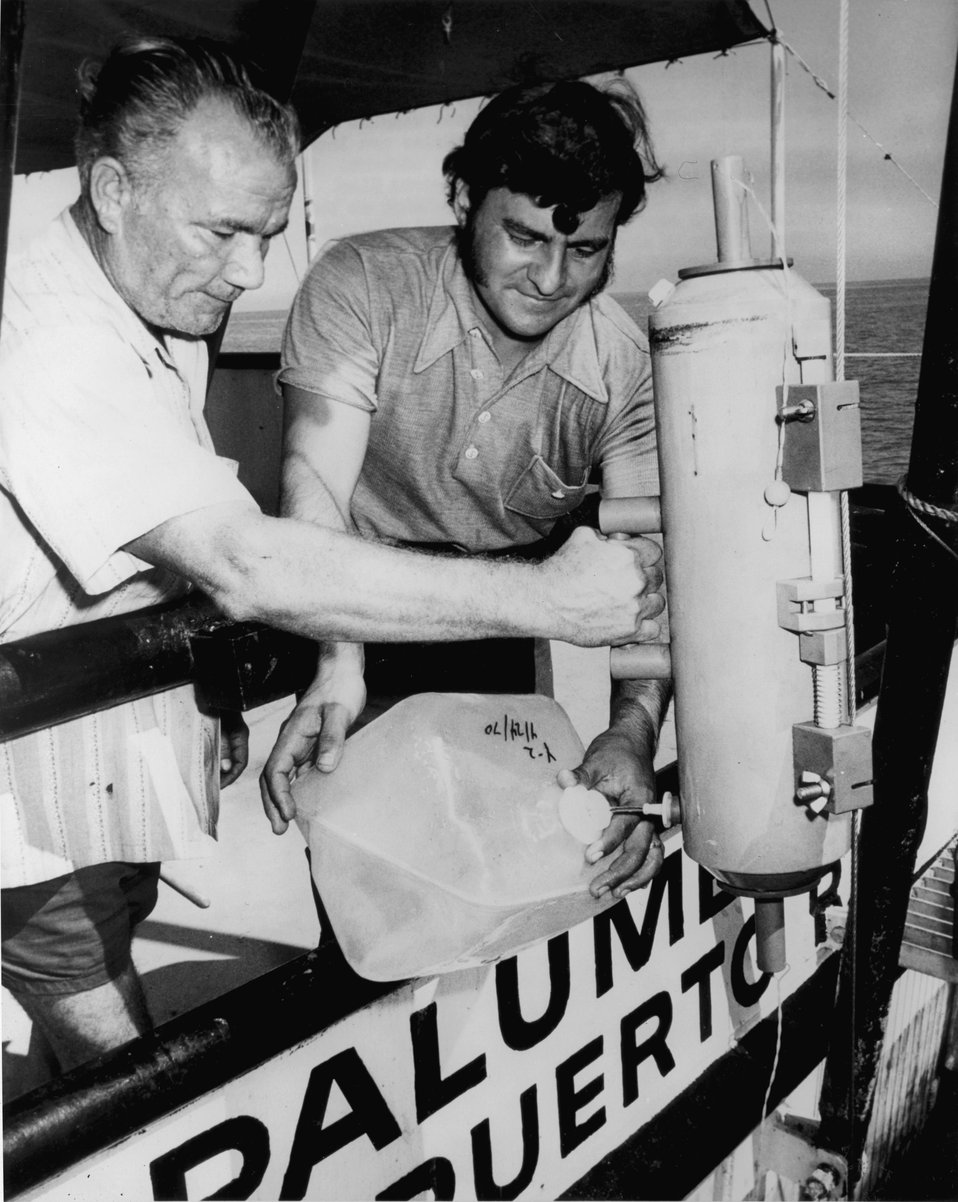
Crewmen aboard the U.S. Atomic Energy Commission's research vessel, R. F. Palumbo, take marine water samples in the Mona Pass area of Puerto Rico. Circa 1972.